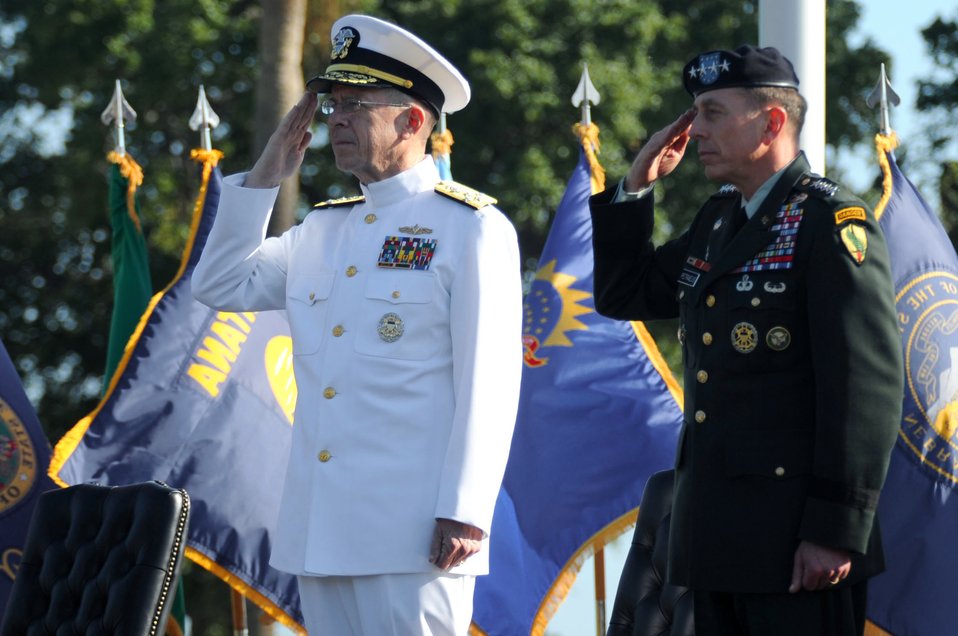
USCENTCOM Change of Command

Army Gen. David H. Petraeus (right) and Chairman of the Joint Chiefs of Staff Adm. Mike Mullen salute the colors during the U.S. Central Command change of command ceremony Oct. 31 at MacDill Air Force Base, Fal. During the ceremony, General Petraeus assumed command of CENTCOM from acting commander Army Lt. Gen. Martin E. Dempsey.